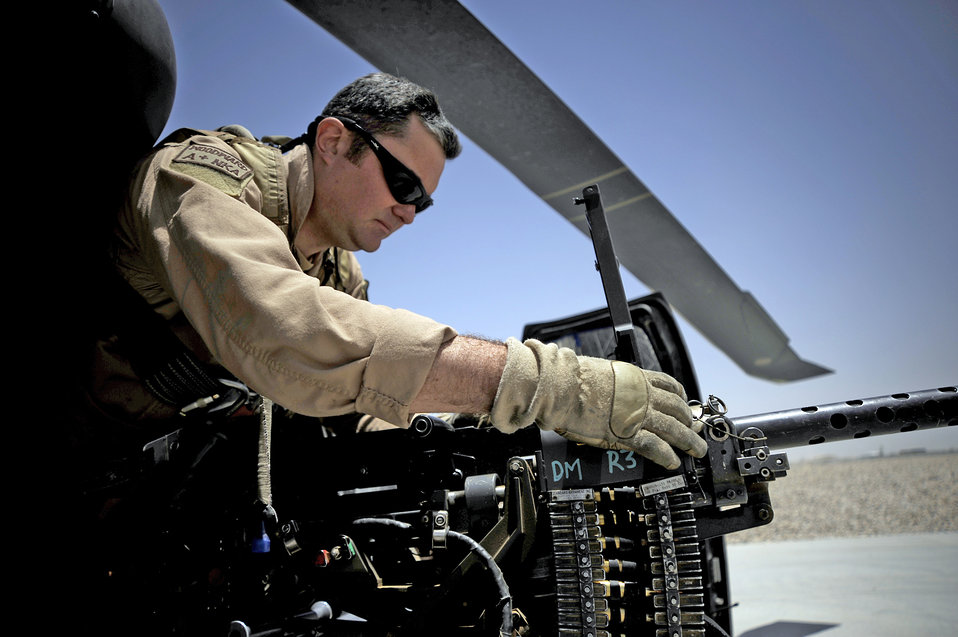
Flight engineers: Critical component to combat search, rescue mission

Tech. Sgt. Brock Woodward performs a preflight inspection of a .50 caliber machine gun June 23 at Camp Bastion, Afghanistan. Sergeant Woodward is a flight engineer with the 129th Expeditionary Rescue Squadron.